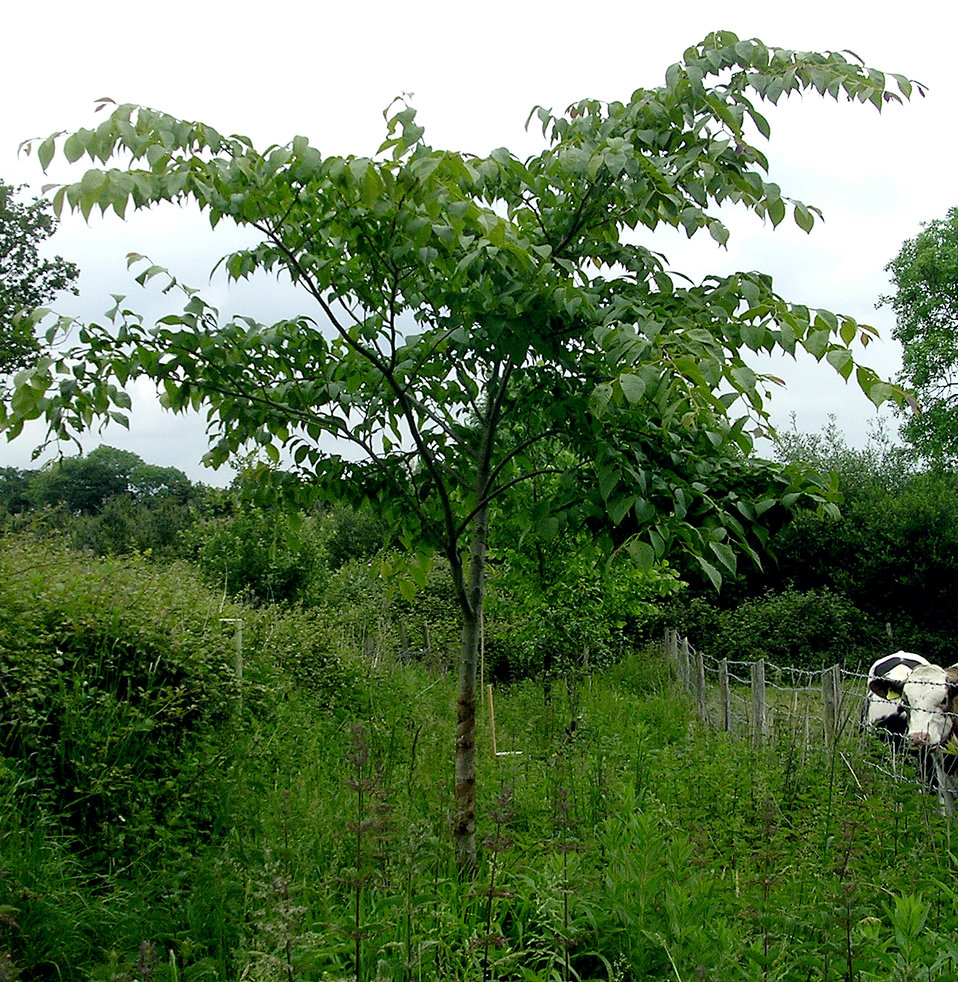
Ulmus davidiana. Photo taken by author, Fontley, England, 2007